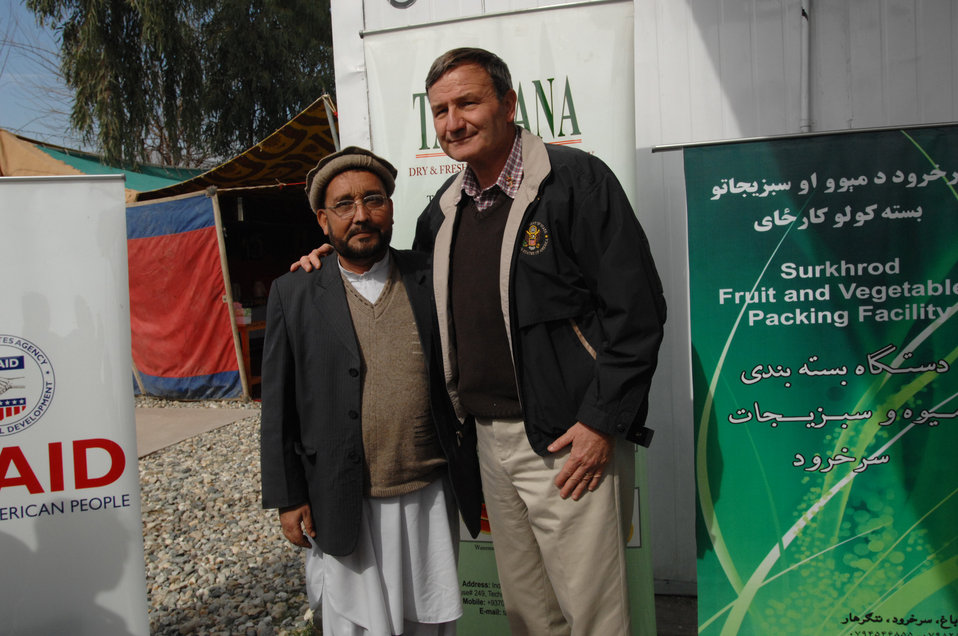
110209sv Shah285